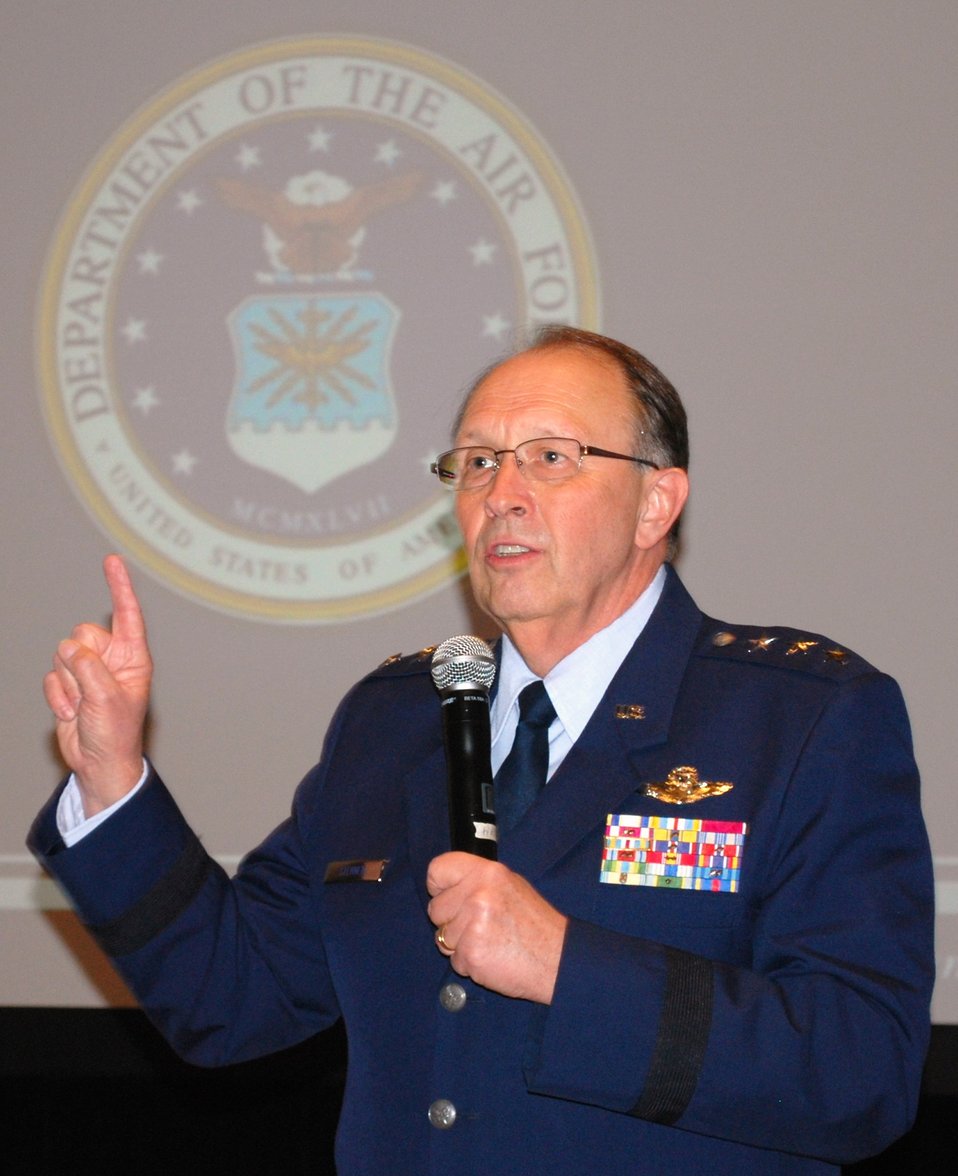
Balancing force top priority say senior Air Force leaders

Lt. Gen. Charles E. Stenner Jr., talks about the importance of capitalizing on the strengths of each component when rebalancing the total force Sept. 20, 2011, at the Air Force Association's 2011 Air & Space Conference and Technology Exposition in National Harbor, Md. More than 7,000 people attended the three-day event at the Gaylord National Resort & Convention Center. Stenner is the chief of the Air Force Reserve.